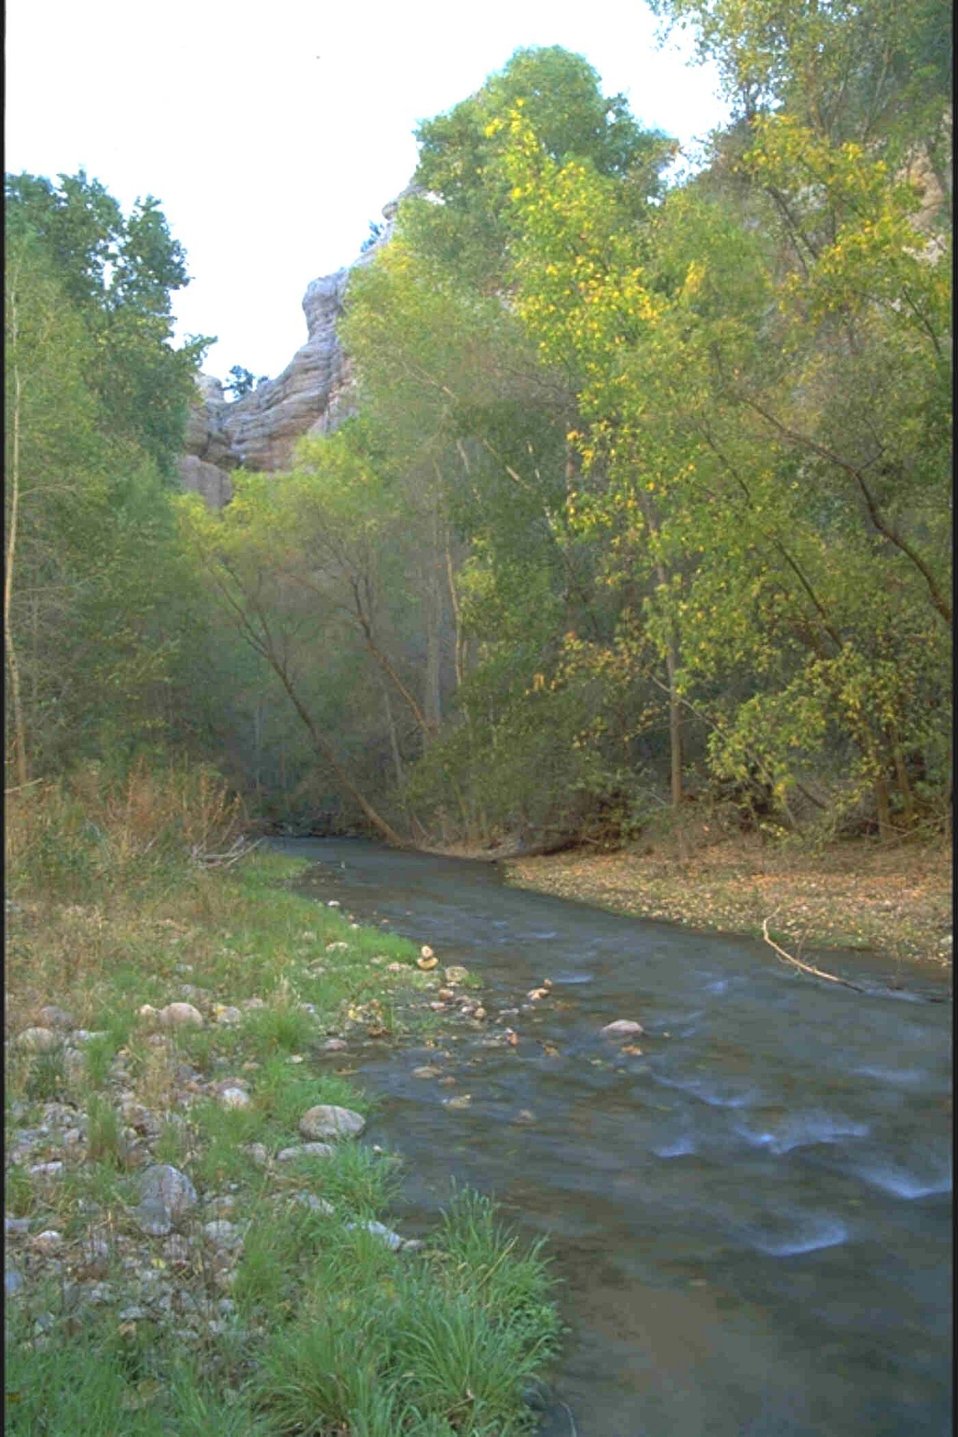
A bend in the eastern end of Aravaiap Canyon fills with fall gold.